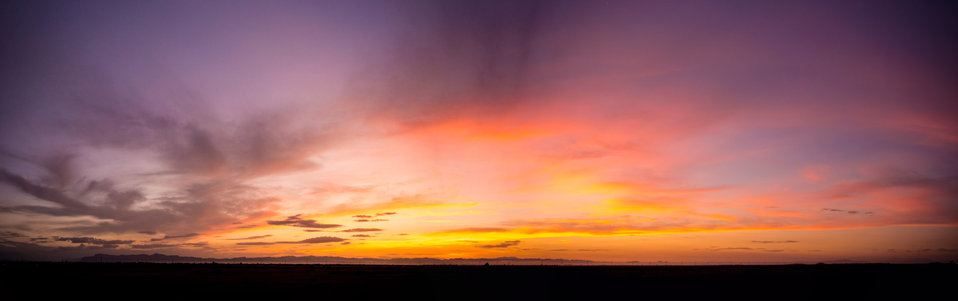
Arizona sunrise 7-29-12.